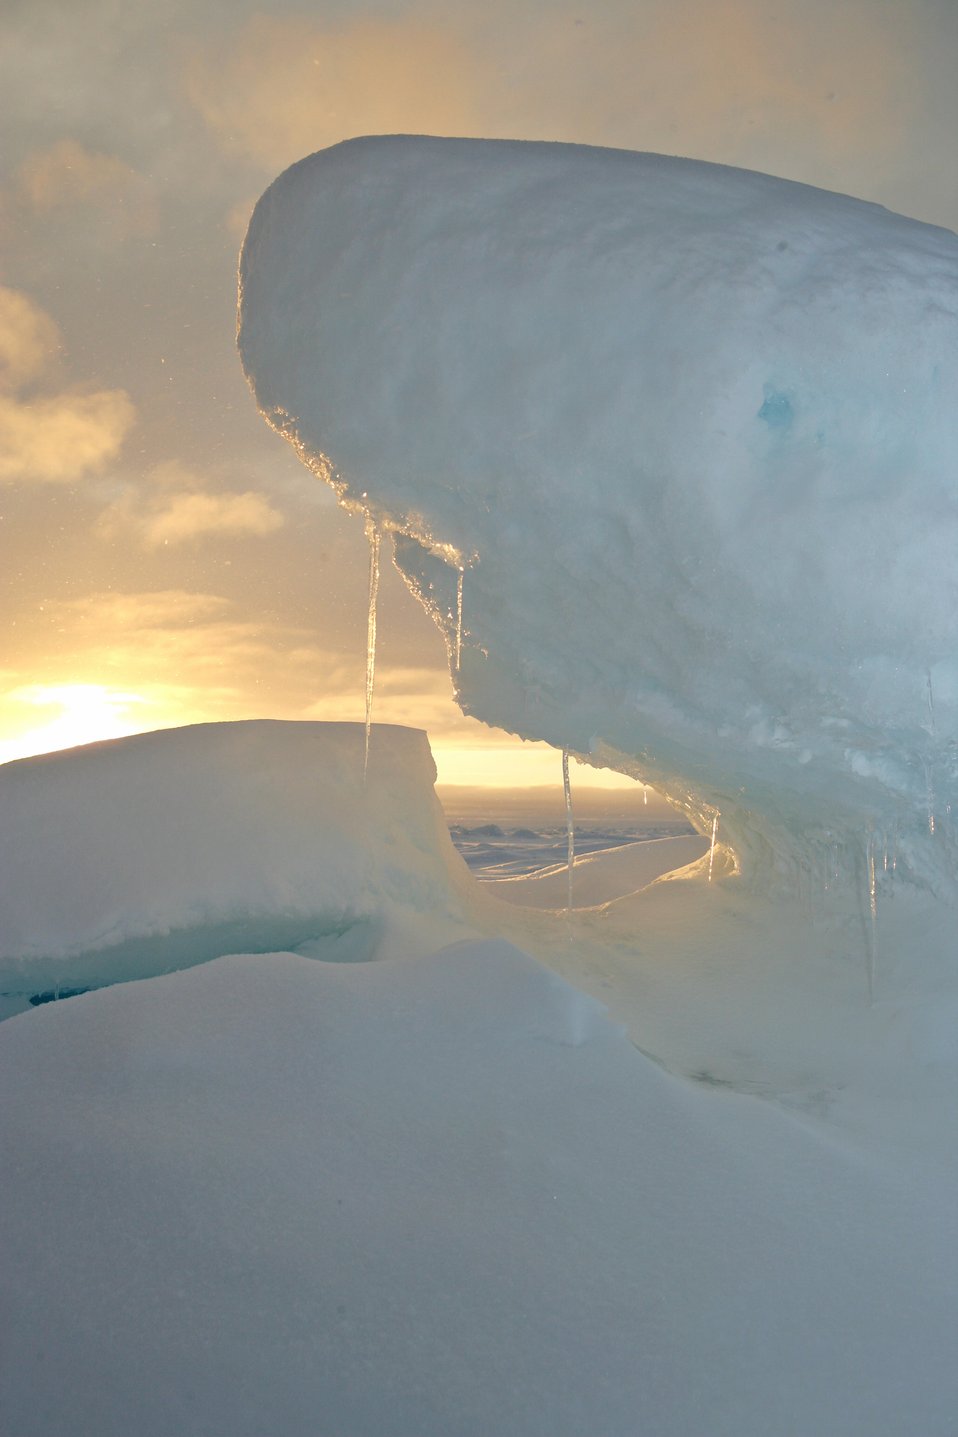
Arctic sunset.